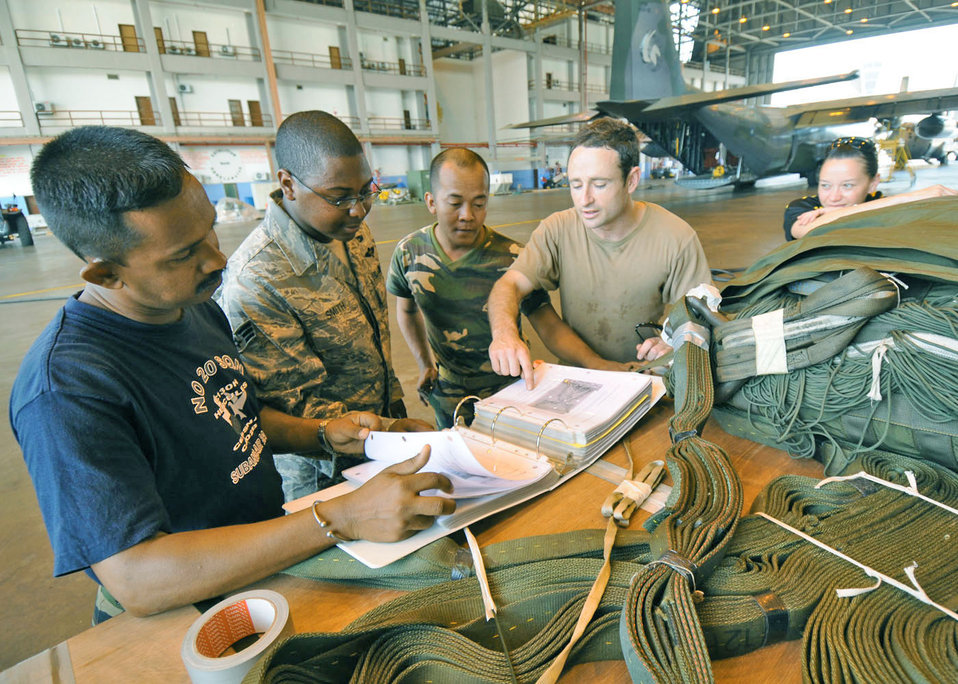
Pacific Airlift Rally 2009 kicks off

Senior Airman Warren Smith (second from left) views technical orders with personnel from the Malaysian, Australian and New Zealand air forces Aug. 19 at Subang Royal Mayaysian Air Force Base, Malaysia. The airmen are participating in Pacific Airlift Rally 2009. Sergeant Smith is a 374th Logistics Readiness Squadron combat mobility flight technician from Yokota Air Base, Japan.